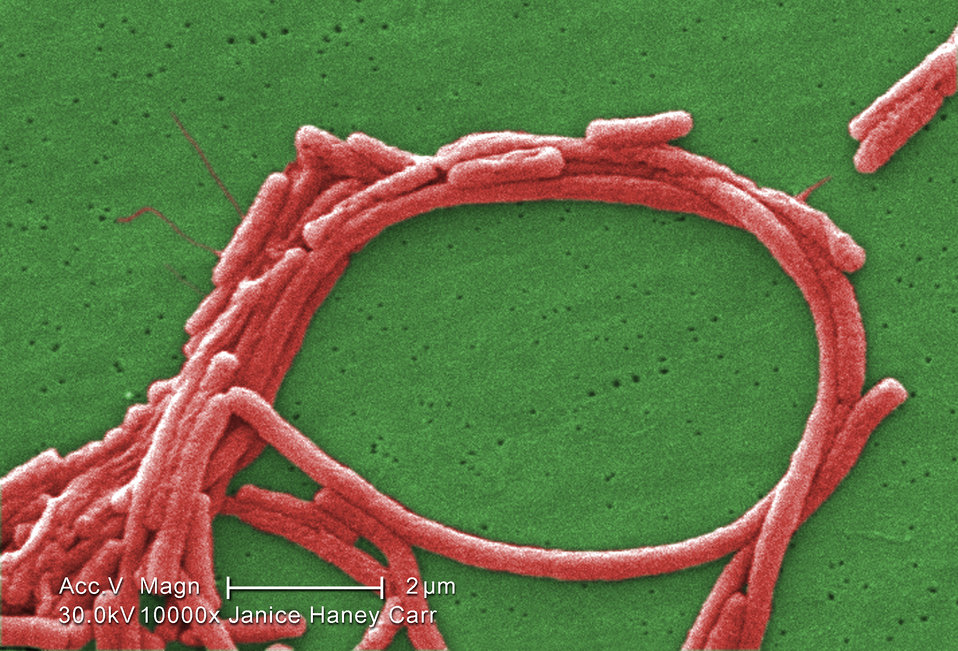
Under a high magnification of 10000X, this colorized scanning electron micrograph (SEM) depicted a grouping of Gram-negative Legionella pneumophila bacteria. Note that you're able to see a number of the flagella emanating from these organisms. Please see PHIL 11092 through 11152 for additional SEMs of these organisms, specifically PHIL 11107 for a black and white version of this image.